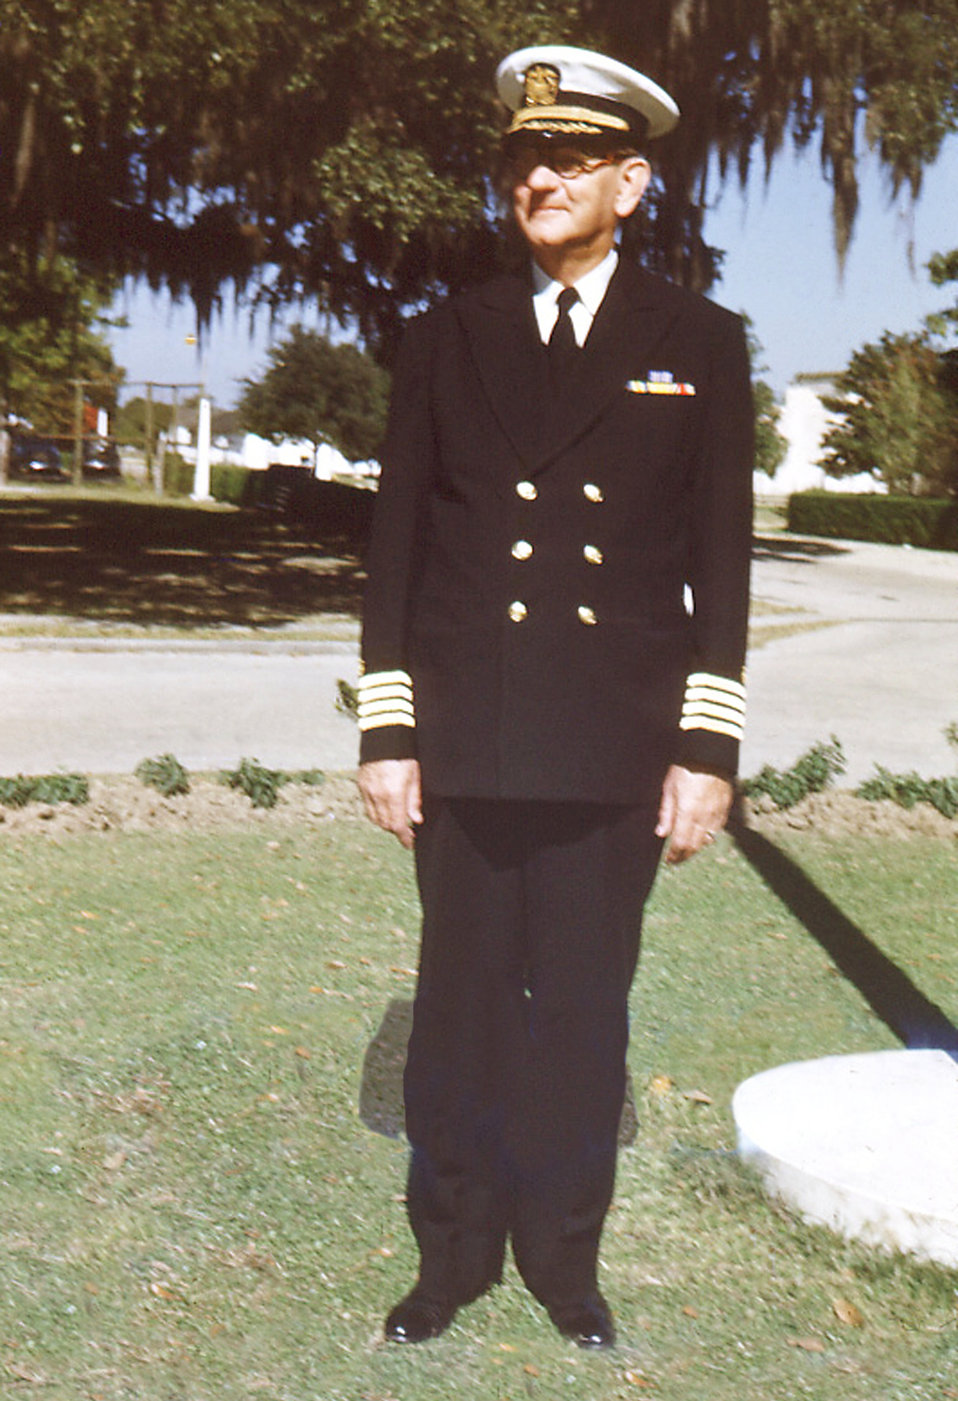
At the time of this photograph was the Carville, Louisiana Leprosarium's Chief Medical Officer (1947-1953), Dr. F. A. Johansen himself, standing 6 feet, 3 inches tall in his impeccably clean uniform. The doctor was said to have been a fine practitioner, and a gentleman."Patients of the U.S. Marine Hospital in Carville, Louisiana, produced a set of 35 mm slides around 1950 from which this image was derived. In 2002, a patient's son donated the set, the only one known in existence, to the museum. The father, a patient at Carville for several years, brought these slides home around 1950 to give his family a snapshot of life at the national leprosarium. The act of quarantining patients for leprosy (HD) remained law in the state of Louisiana until 1957."